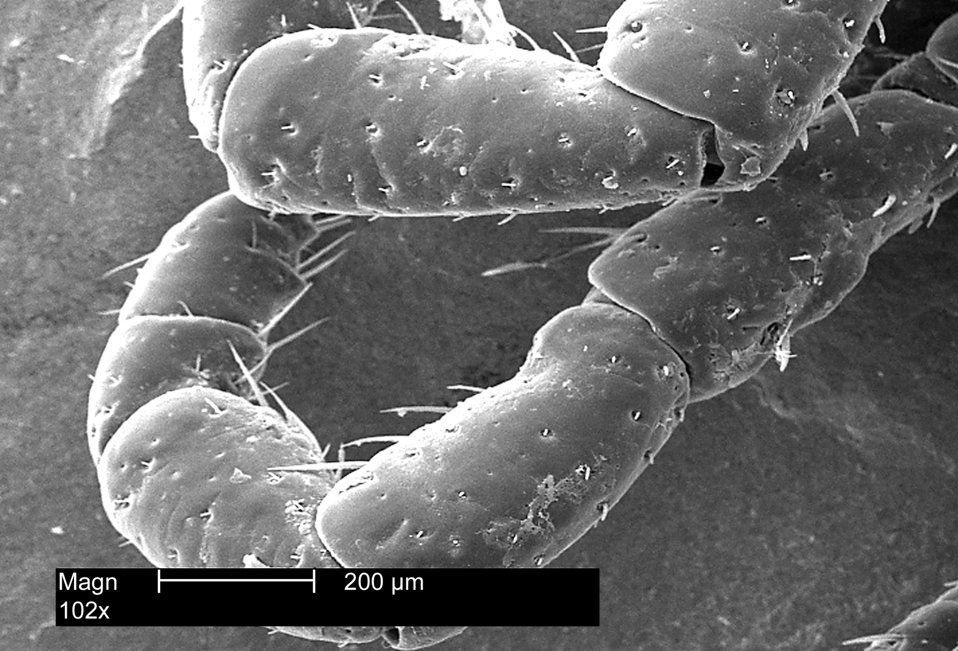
Dorsal view of the leg appendages of an American Dog Tick, Dermacentor variabilis, magnified 102x.